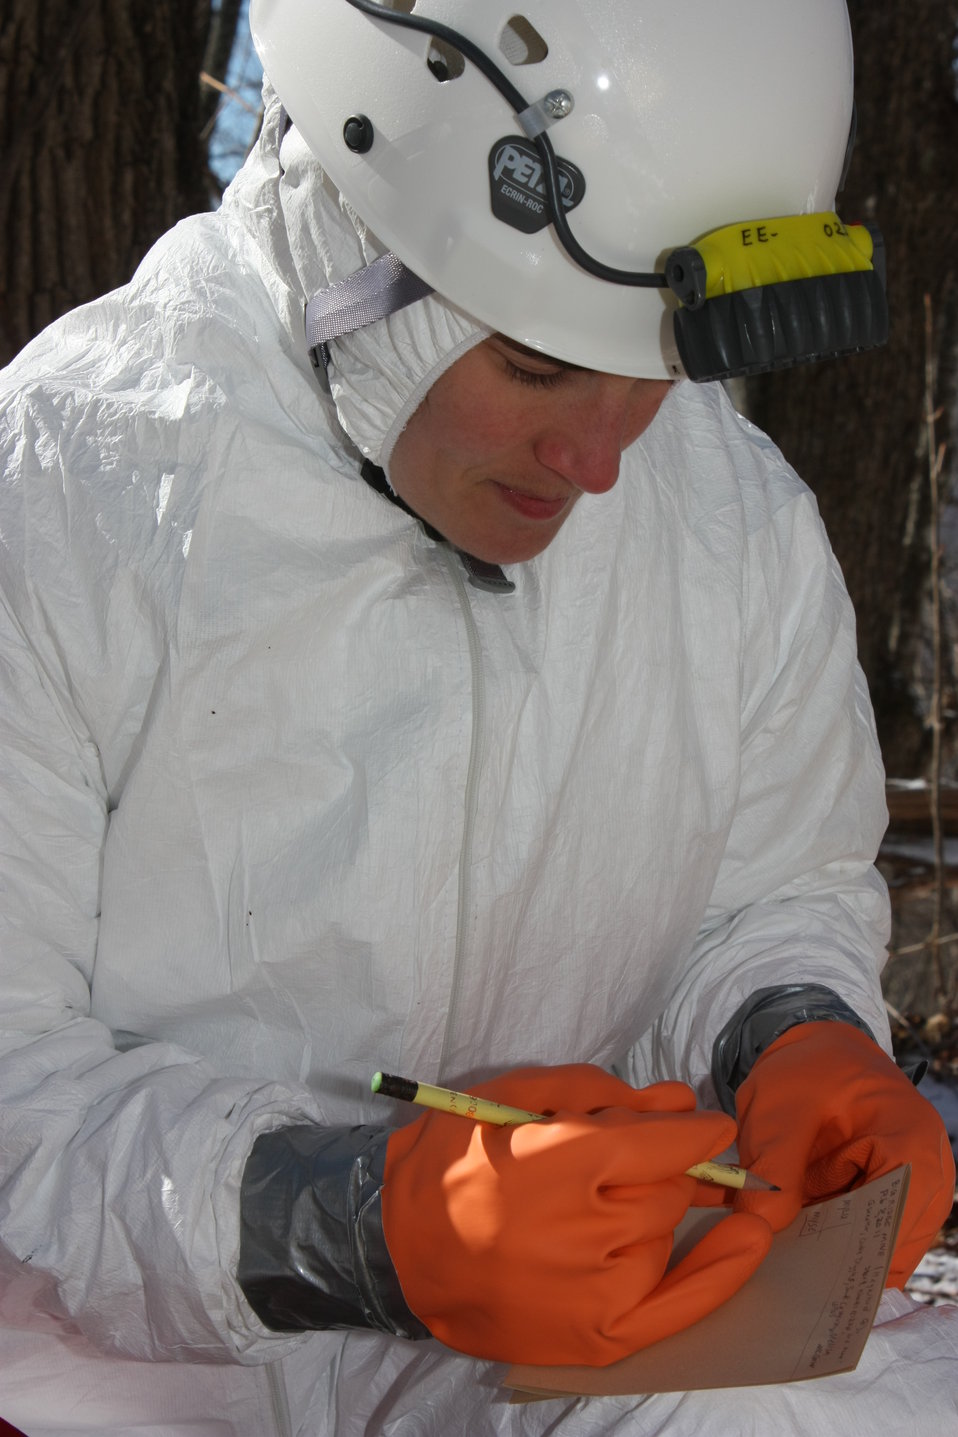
NCWRC biologist Gabrielle Graeter taking notes